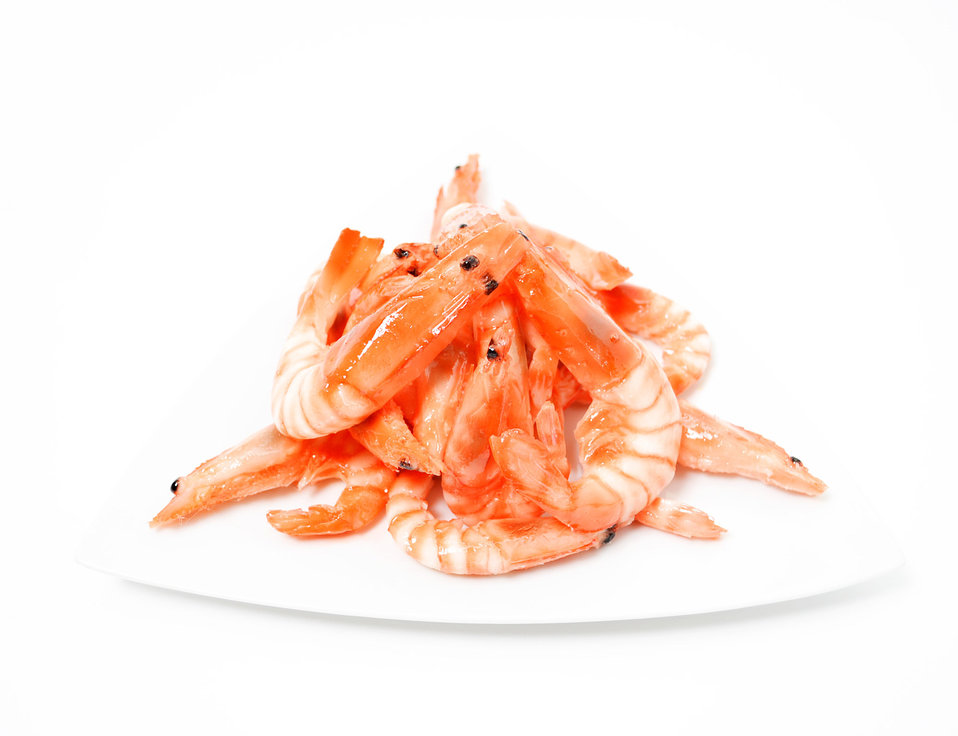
Boiled shrimp,seafood,shrimp,food,fish,white back.